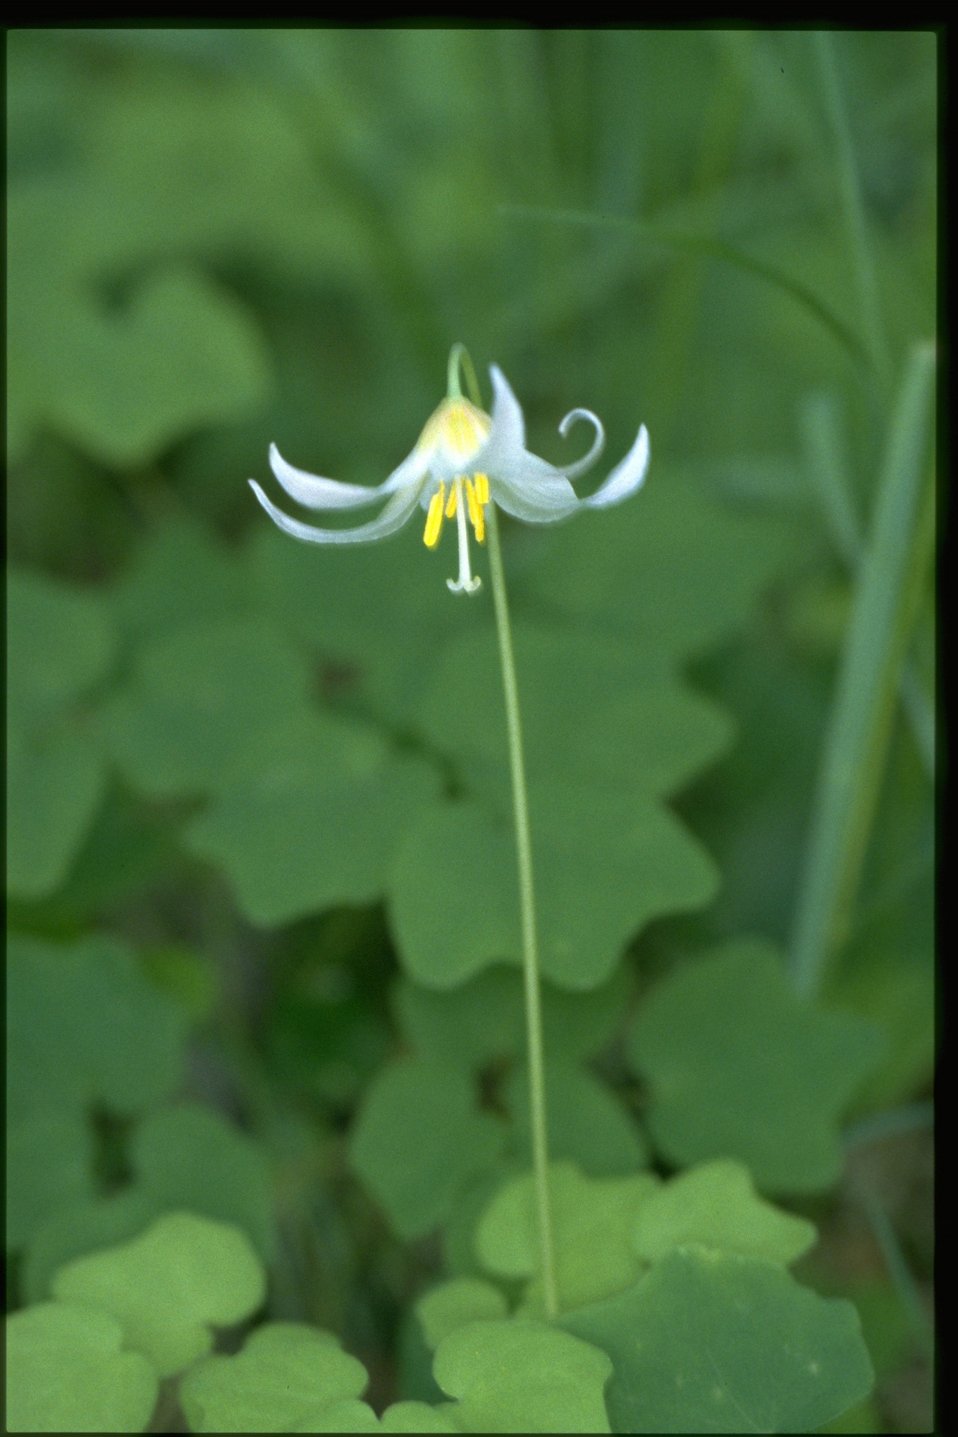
Medium shot of Erythronium oreganum.